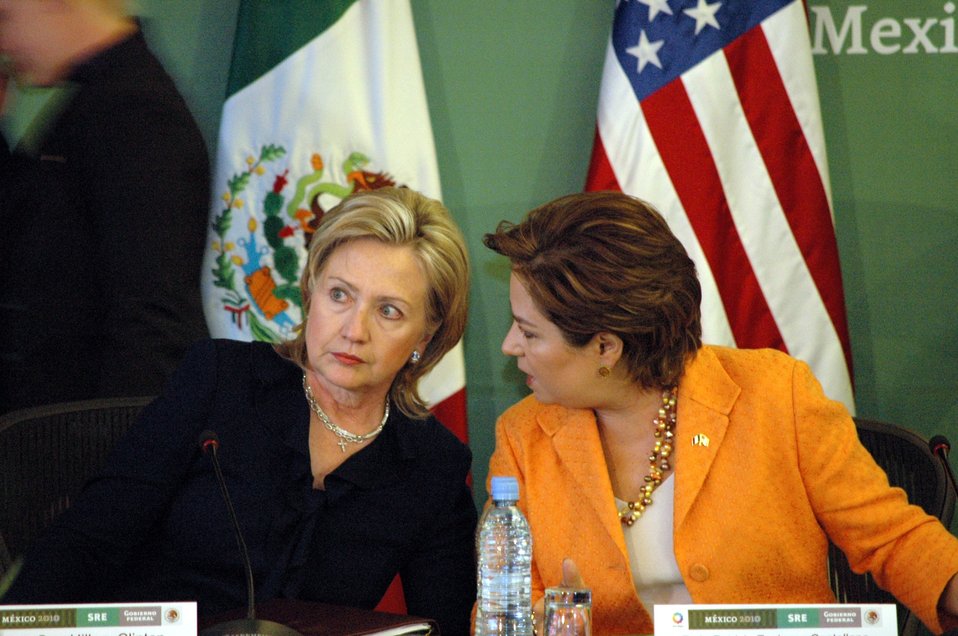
Secretary Clinton With Mexican Secretary of Foreign Affairs Ambassador Patricia Espinosa

U.S. Secretary of State Hillary Rodham Clinton and Mexican Secretary of Foreign Affairs Ambassador Patricia Espinosa talk moments before the Second Merida Initiative High Level Working Group Meeting begins, Mexican Secretariat of Foreign Affairs, Mexico City, March 25, 2010.